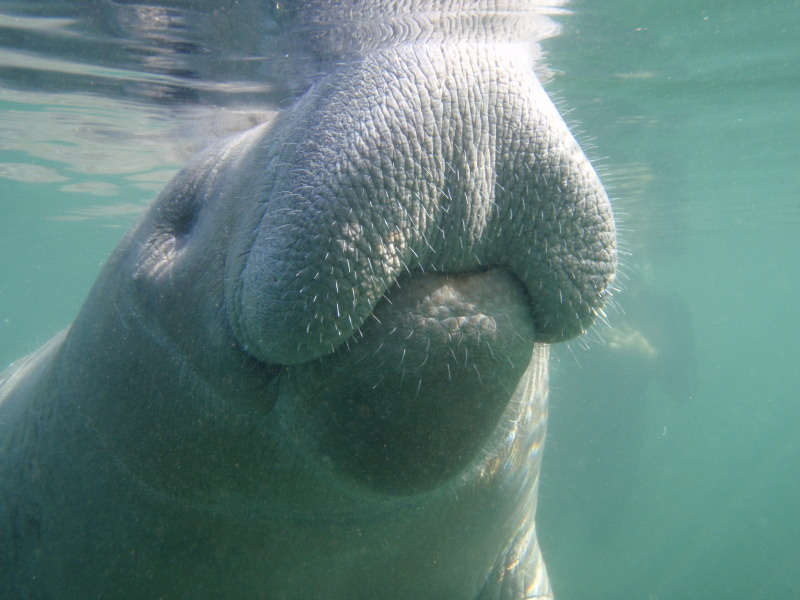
Endangered Florida manatee (Trichechus manatus)

Photo credit: Tracy Colson

The Crystal River National Wildlife Refuge, was established in 1983 specifically for the protection of the endangered West Indian Manatee. This unique refuge preserves the last unspoiled and undeveloped habitat in Kings Bay, which forms the headwaters of the Crystal River. The refuge preserves the warm water spring havens, which provide critical habitat for the manatee populations that migrate here each winter.